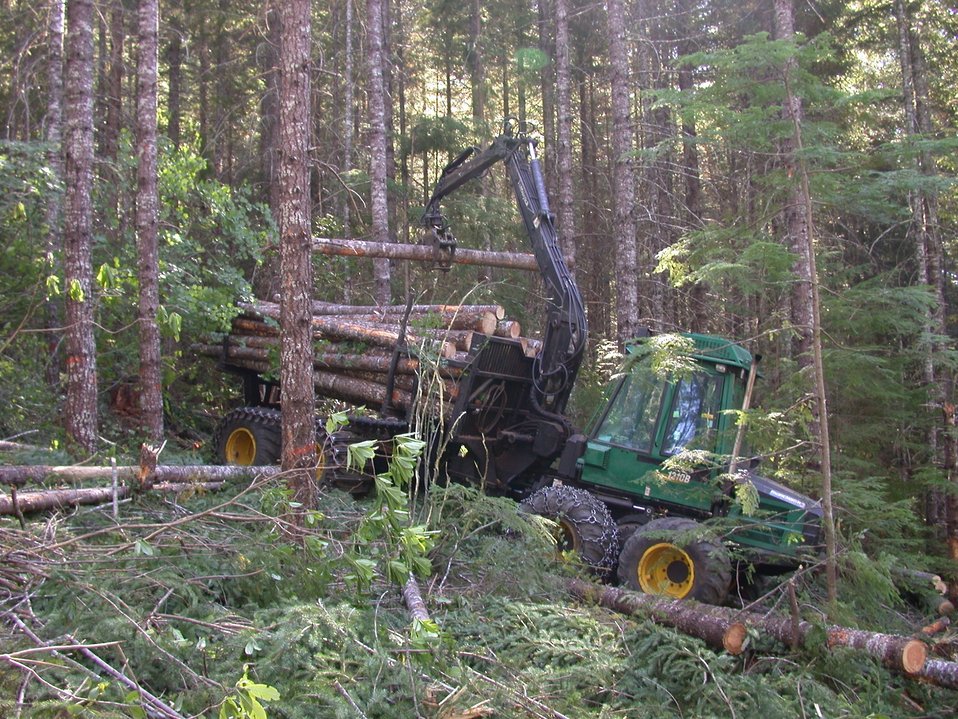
Camas East Timber Sale in Late Successional Reserve.